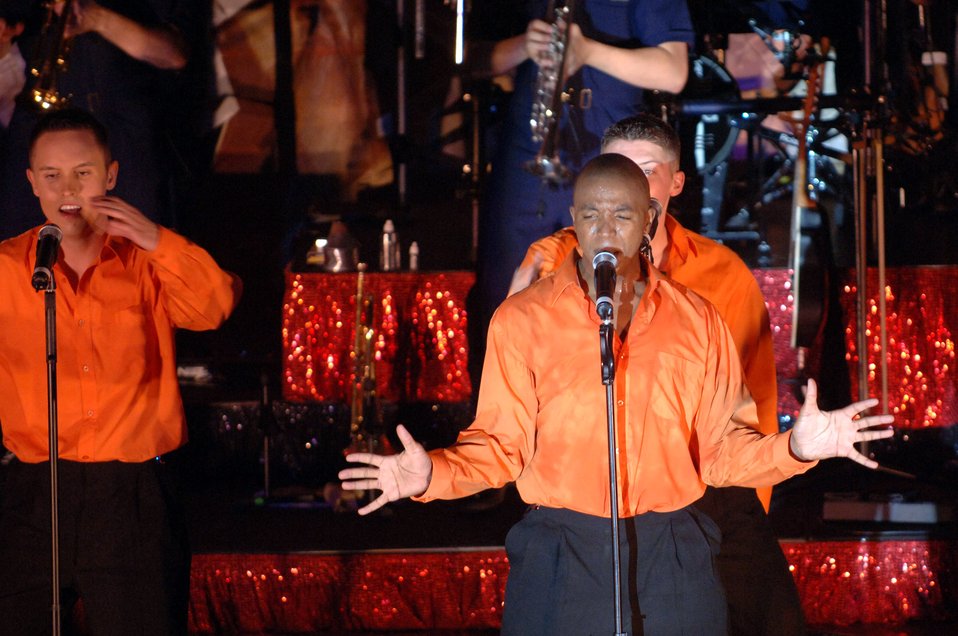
Tops In Blue put on a show for Airmen, Soldiers at Balad

Vocalist Staff Sgt. Keith Loudermill belts out a tune for servicemembers during a Tops In Blue performance April 28 at Balad Air Base, Iraq. Thirty eight active-duty Airmen with the Air Force's premier expeditionary entertainers set out in mid-April to kick off their 2007 tour singing and dancing their way through the area of responsibility. They will tour Southwest Asia for three weeks, and continue their 2007 tour through February 2008. Sergeant Loudermill is a personnel craftsman with the Air Force Personnel Center at Randolph Air Force Base, Texas.